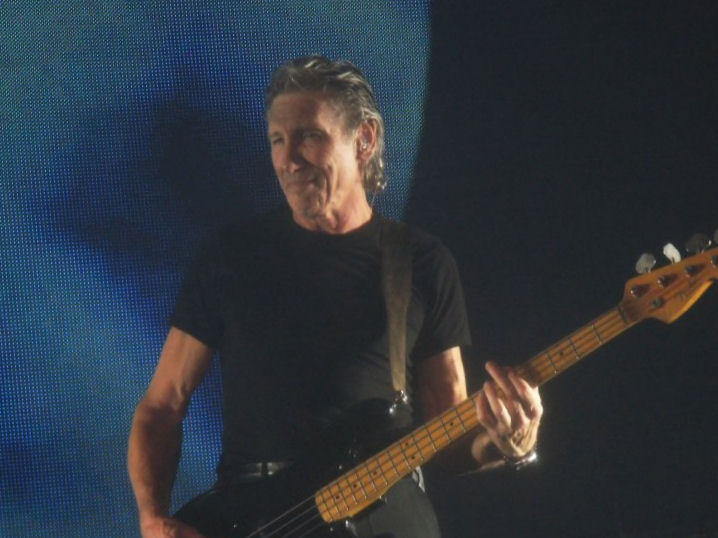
Español: Roger waters en el NEC Arena